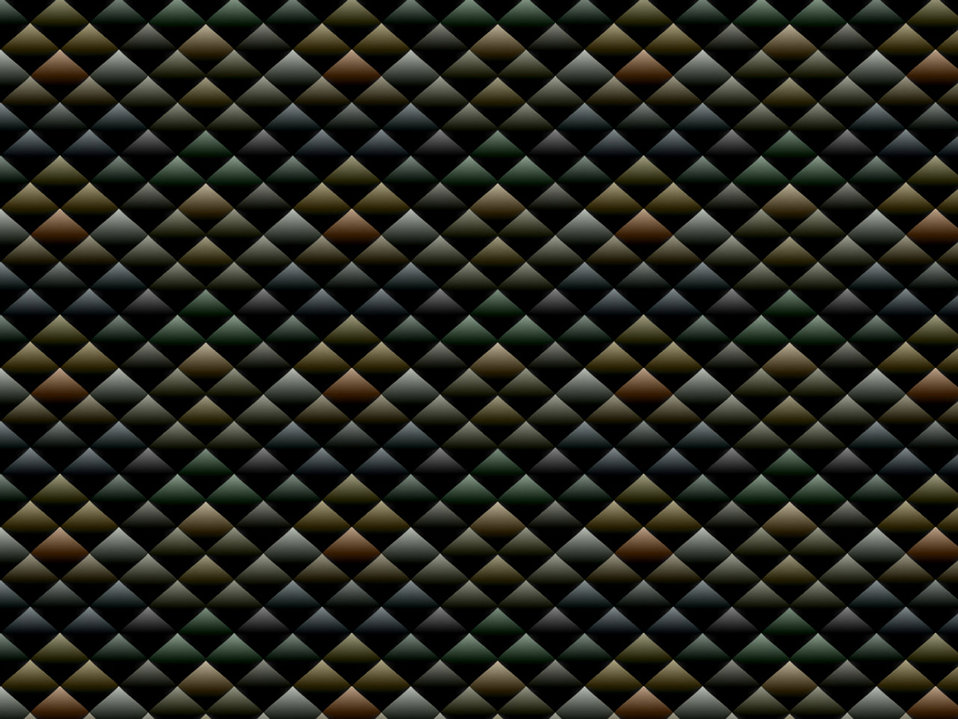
Snake

This looks like the sheen and scales of snake skin.